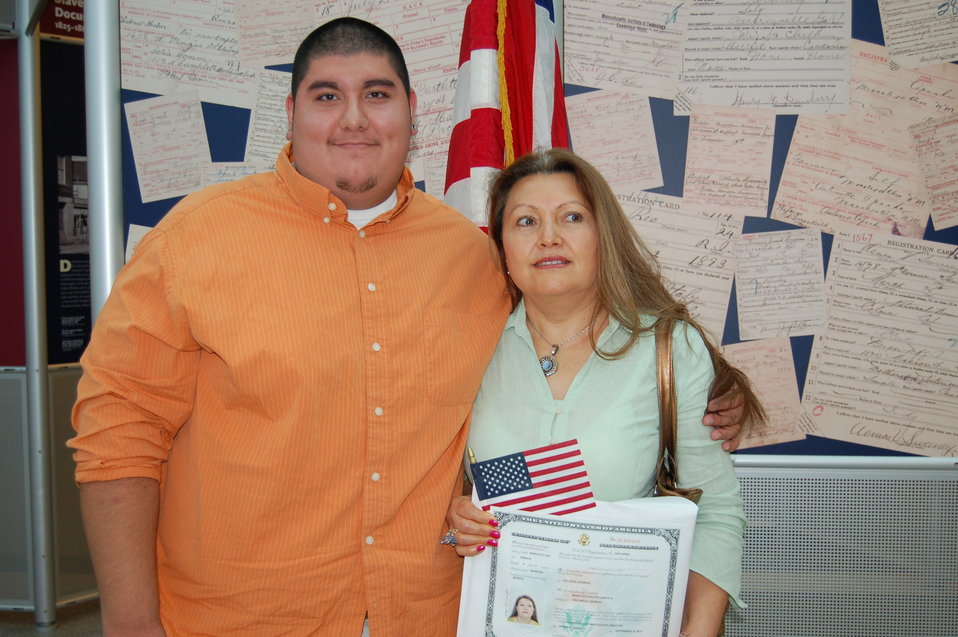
New Citizens